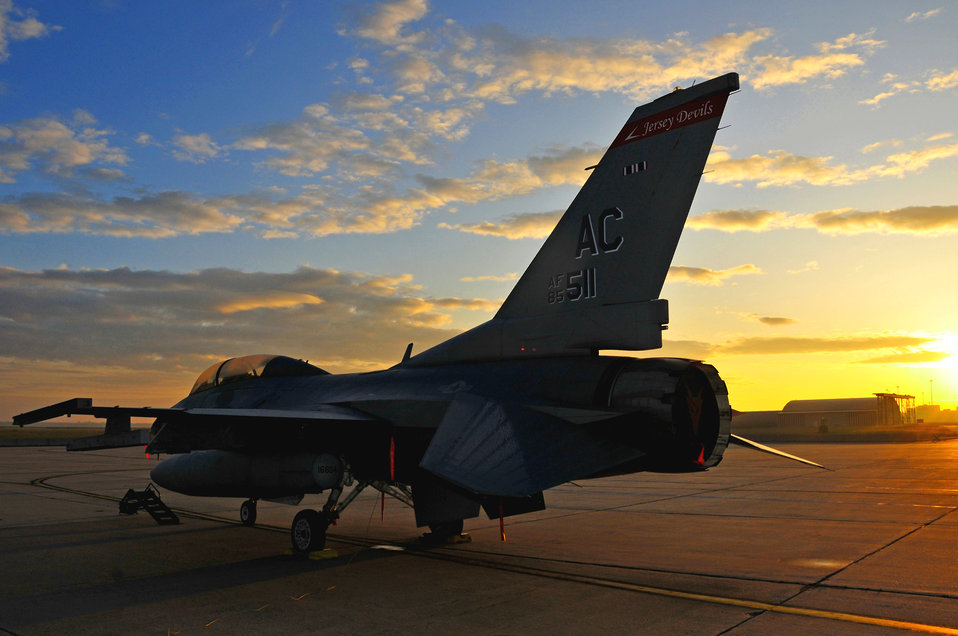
In the dawn's early light

An F-16 Fighting Falcon assigned to the New Jersey Air National Guard's 177th Fighter Wing at Atlantic City International Airport sits on the flightline early in the morning May 20, 2010.